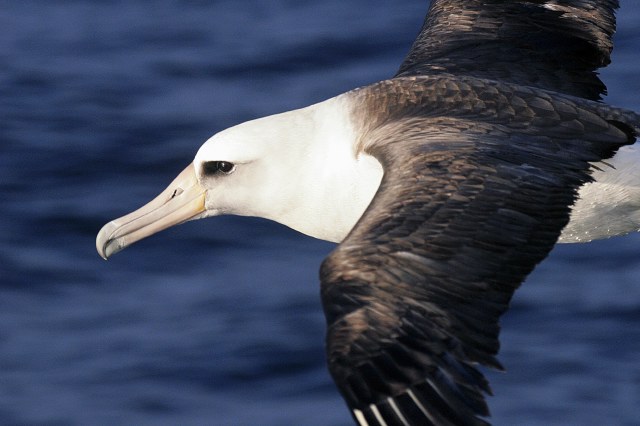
Laysan albatross, Alaska Maritime Refuge, by Steve Ebbert, USFWS